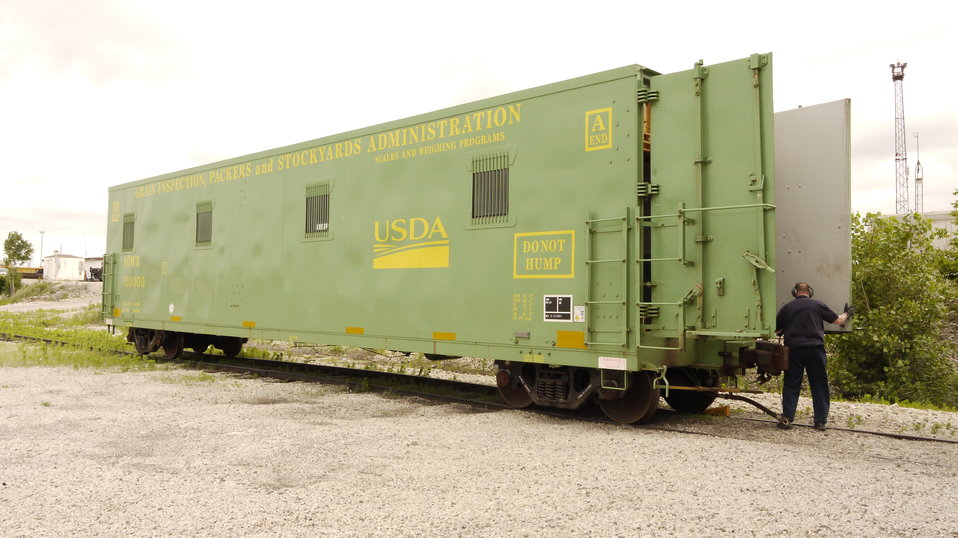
This is the U.S. Department of Agriculture’s (USDA) Grain Inspection, Packers, and Stockyard Administration (GIPSA) FGWX700000 test car unit with USDA GIPSA industrial specialist Marcus Harwitz unloading the 10,000 lb. test weight cart and 10,000 lb. test weight standards (blocks) at the USDA GIPSA Master Scale Depot in Chicago, IL on Jul 2, 2013. These weights can be loaded onto the test cart to make a total of a 100,000 lb. test weight group including the cart that is used to test railroad track scales for calibration. . USDA GIPSA entered into an agreement with the National Institute of Standards and Technology (NIST) and the Association of American Railroads (AAR) in 1980 transferring responsibility to USDA’s GIPSA to maintain the Master Scale facility in Chicago, IL and calibrate all the master scales in the continental U.S. annually.